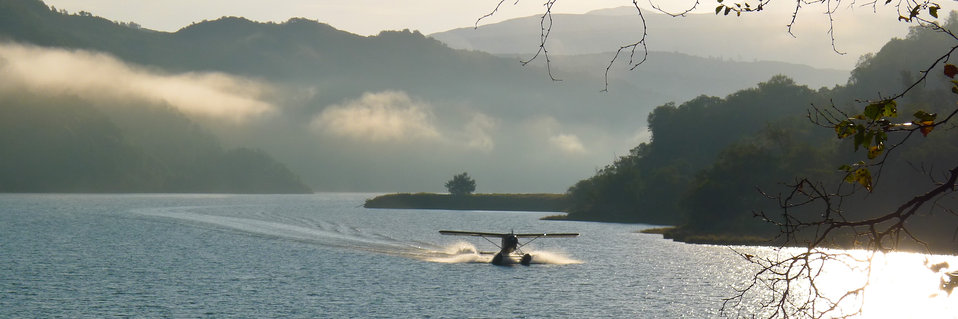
Flying into Uganik Lake

Lisa Hupp/USFWS
Source: Kodiak NWR
Uganik Lake is accessible from the town of Kodiak by a 25 minute floatplane ride.